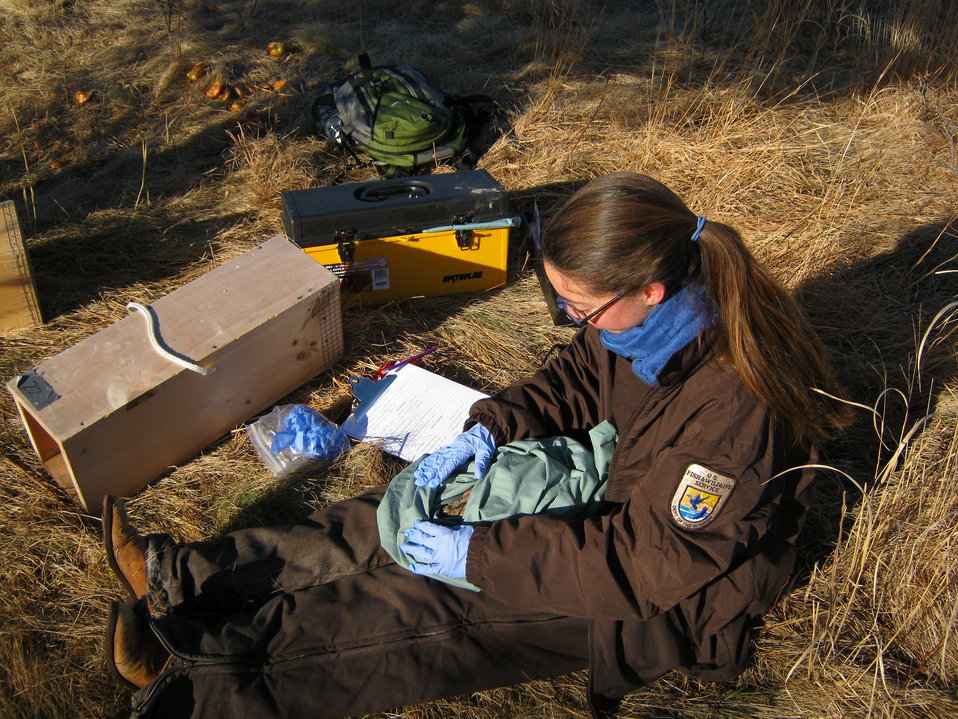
Finding New England cottontails

The information gathered by this wildlife intern will help us determine which cottontail lives here on Aquidneck Island in the land trust. The goal is to find where New England cottontails still persist and protect those areas.